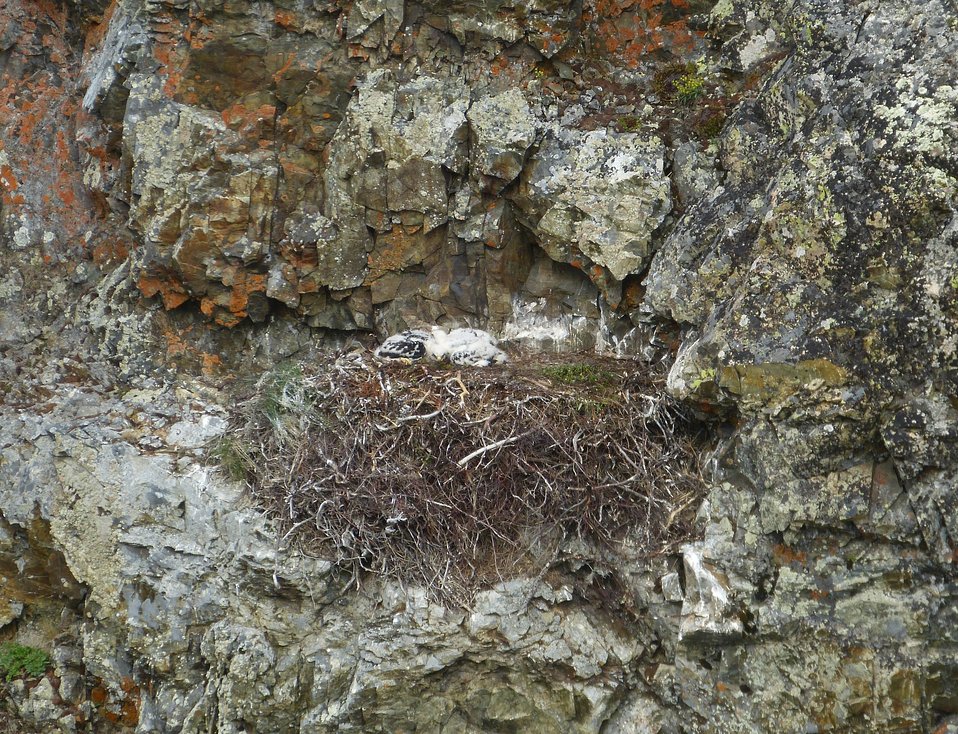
Golden Eagle nest, Kilbuck Mountains, Yukon Delta National Wildlife Refuge

Photo by: Kristine Sowl,
USFWS, Yukon Delta NWR, July 10, 2013